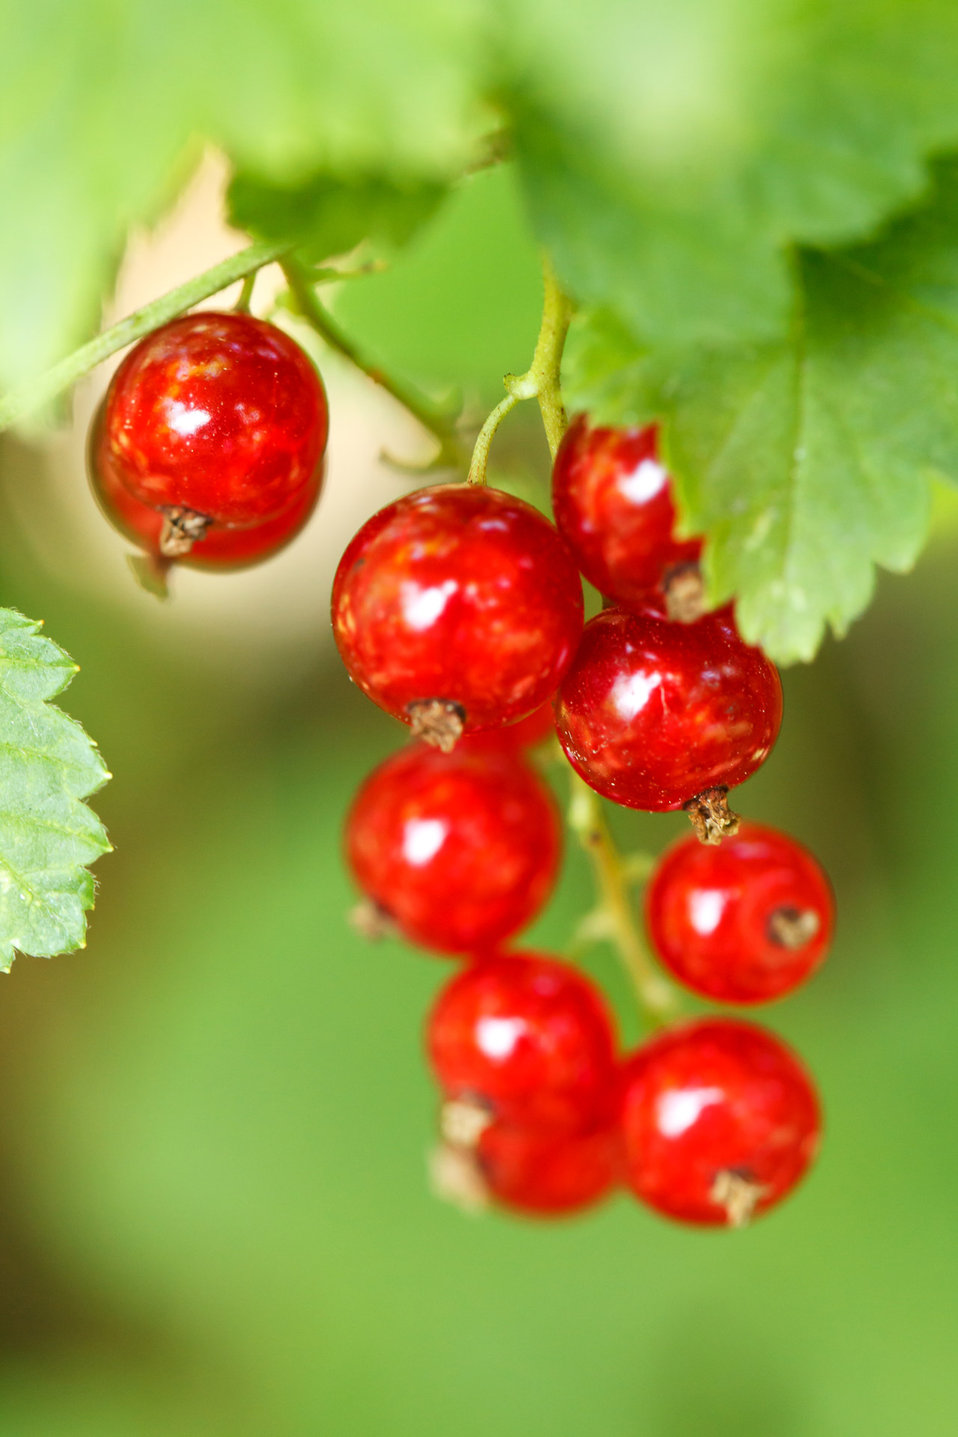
Red currant

Cluster of red currant berries on a branch.